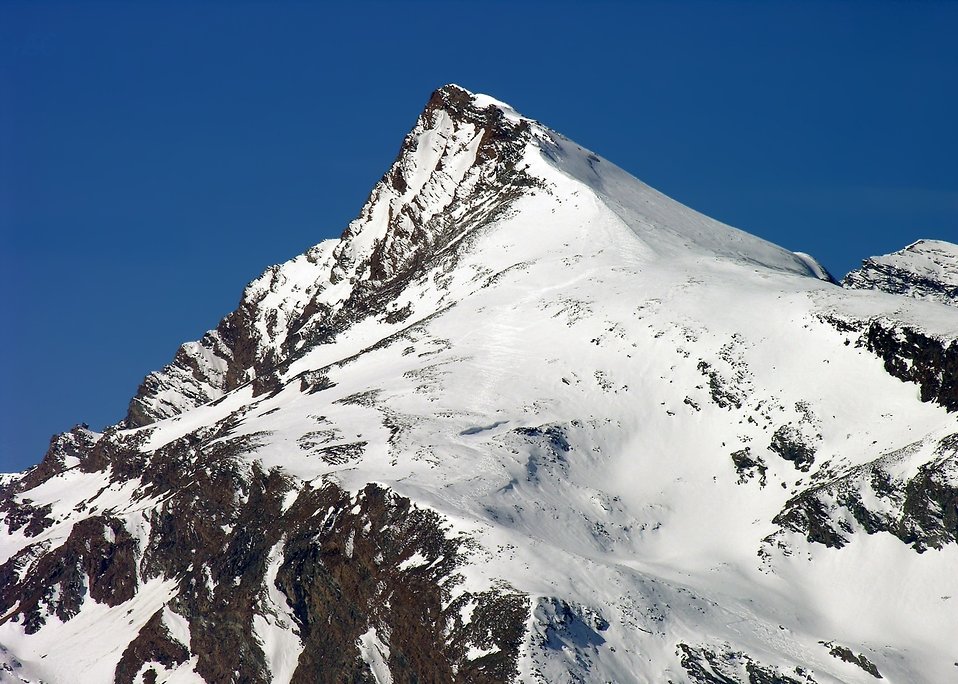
Italiano: Alpi Graie - Italy